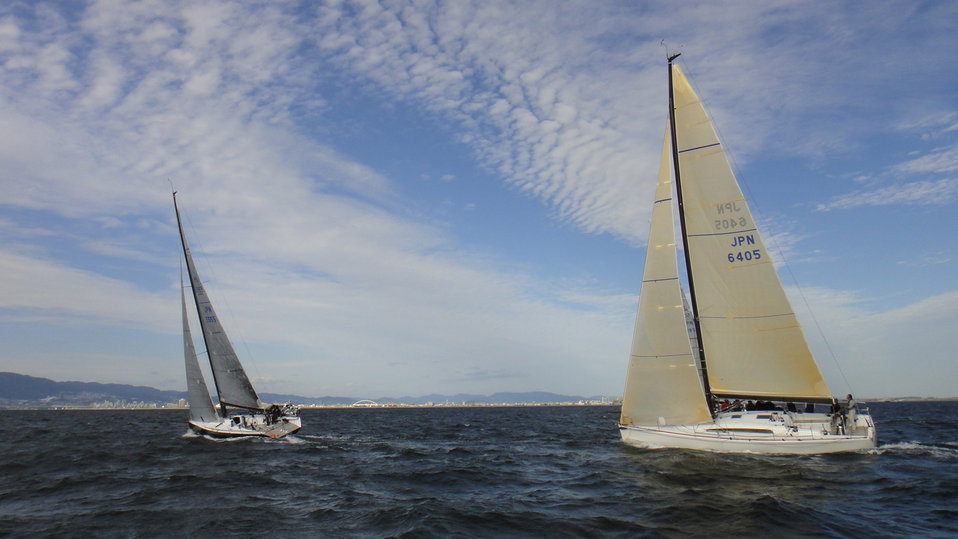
Sailing under the blue sky.